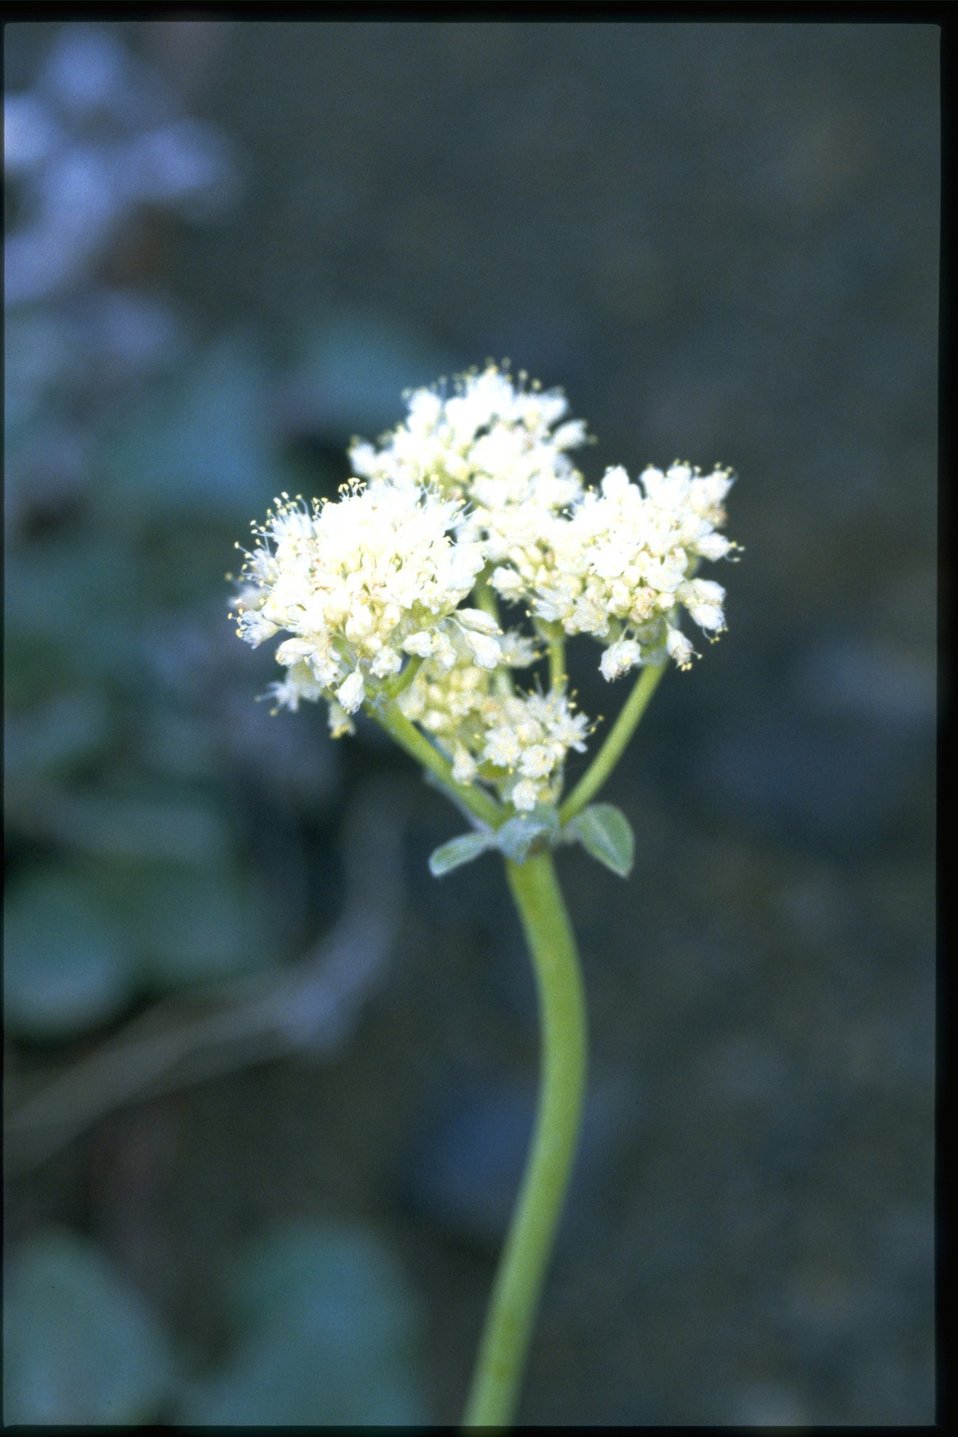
Closeup shot of Apiaceae.